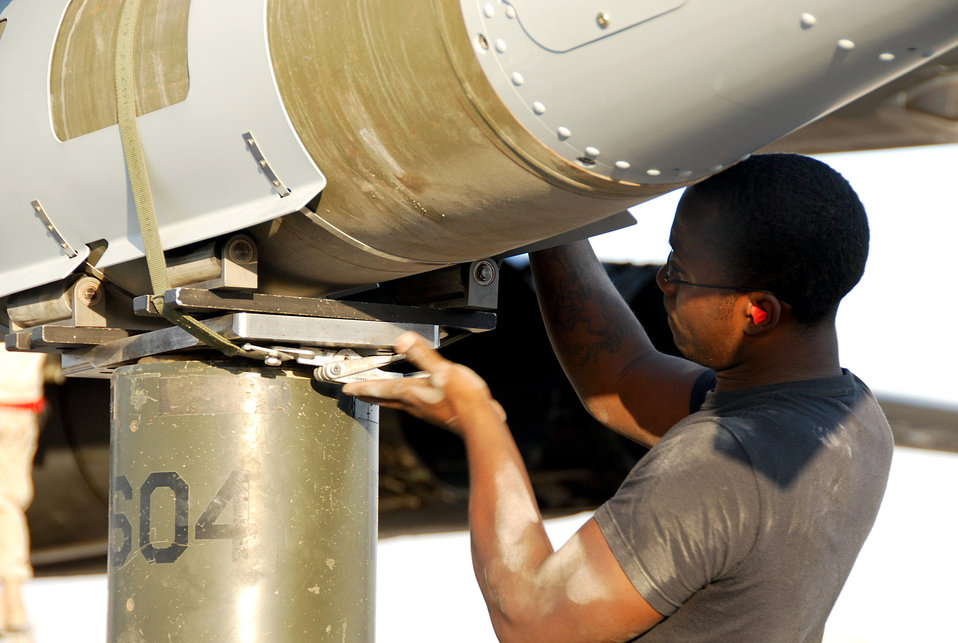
Having a bomb

Airman 1st Class Daniel Morton secures a bomb with a strap to the ram of a ram jammer Dec. 21 at a Southwest Asia air base. Airman Morton is assigned to the 379th Expeditionary Maintenance Squadron and deployed from Dyess Air Force Base, Texas. His hometown is Anderson, S.C.